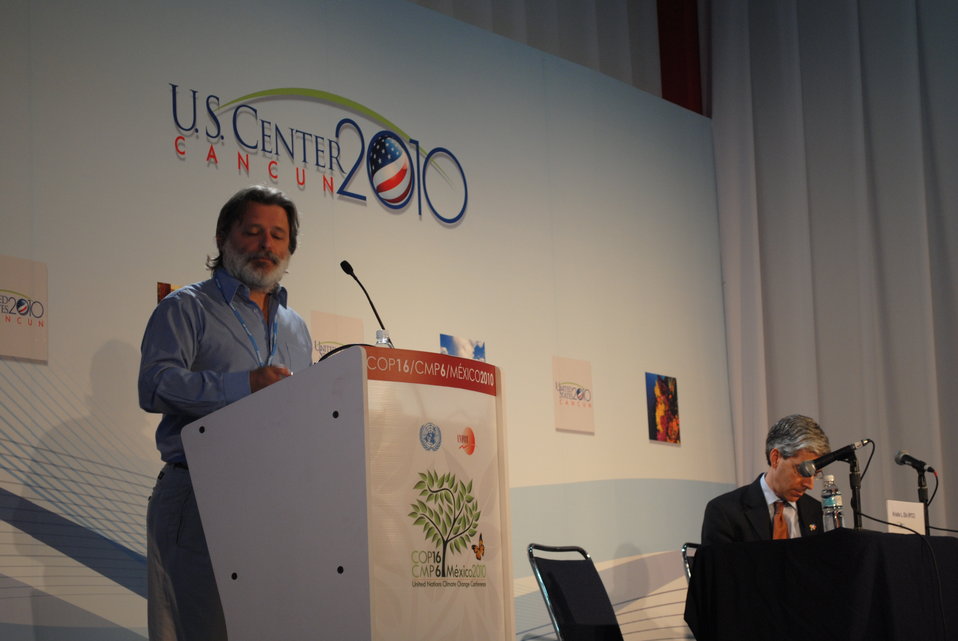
A Panelist Presents During the 'Climate Change and Human Health' Side Event

A panelist presents during the side event, 'Climate Change and Human Health,' at the U.S. Center at COP-16 in Cancun, Mexico, on December 3, 2010.